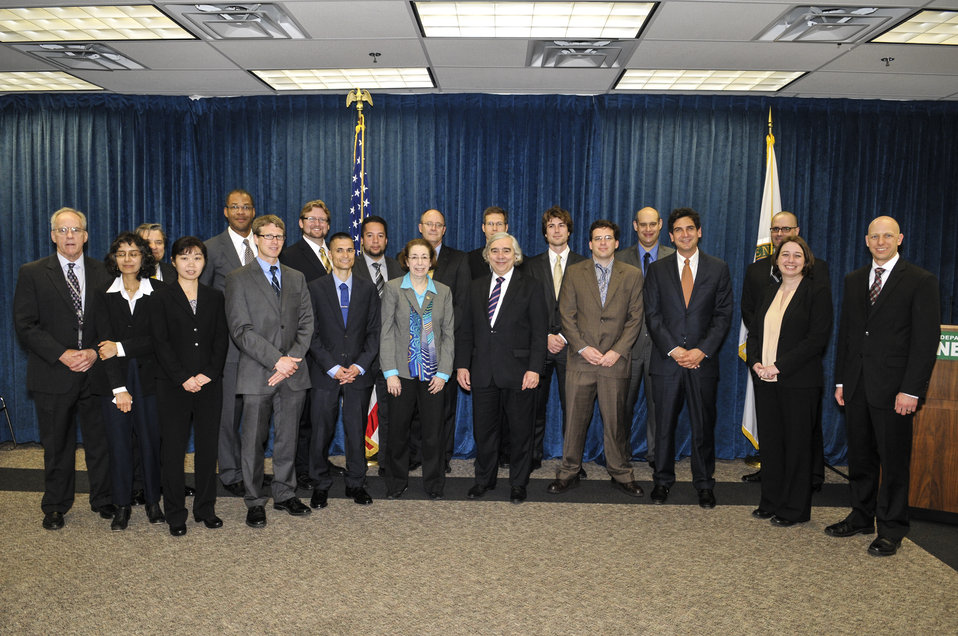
PECASE Awards: DOE Secretary E. Moniz with DOE Office of Nuclear Energy Acting Principal Deputy Assistant Secretary Dennis Miotla, PECASE Awardee Meimei Li on April 14, 2014